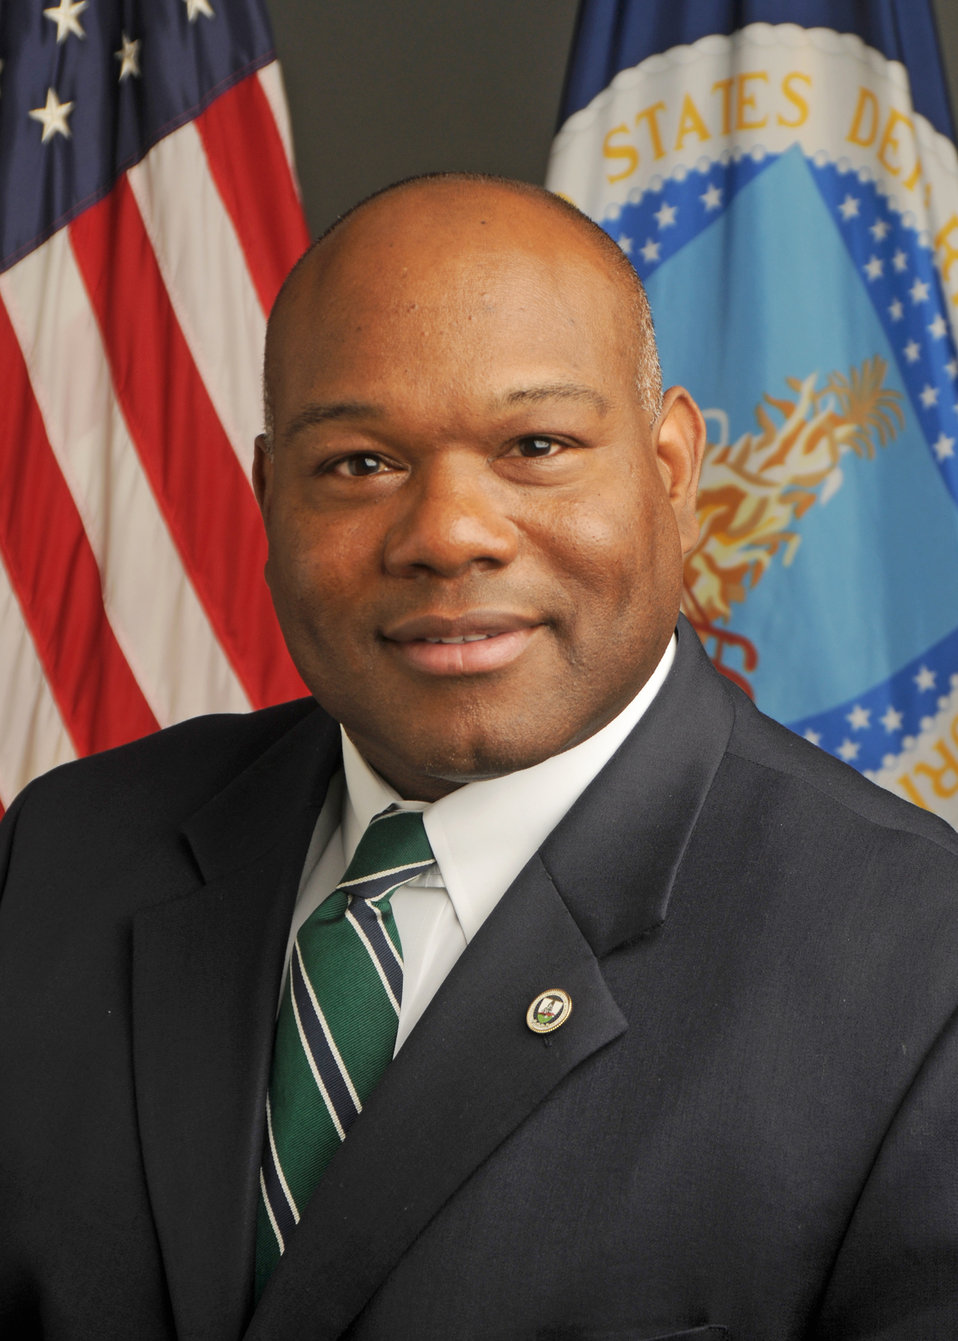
10di1069-016 Deputy Administrator Risk Management Agency Michael Ofton

Portrait of Michael Ofton Deputy Administrator RMA.